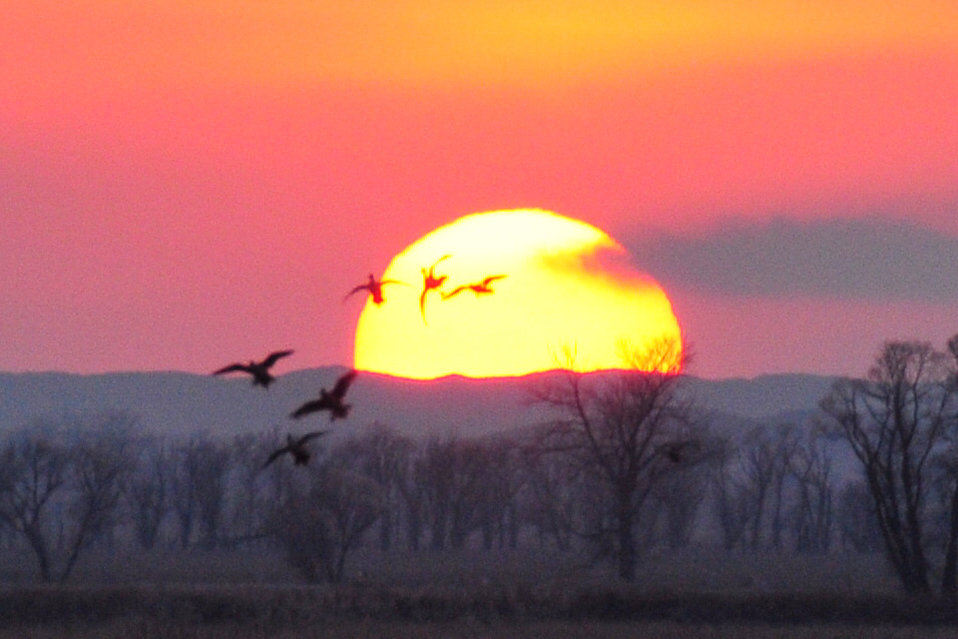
Mallards at sunset Lacreek National Wildlife Refuge